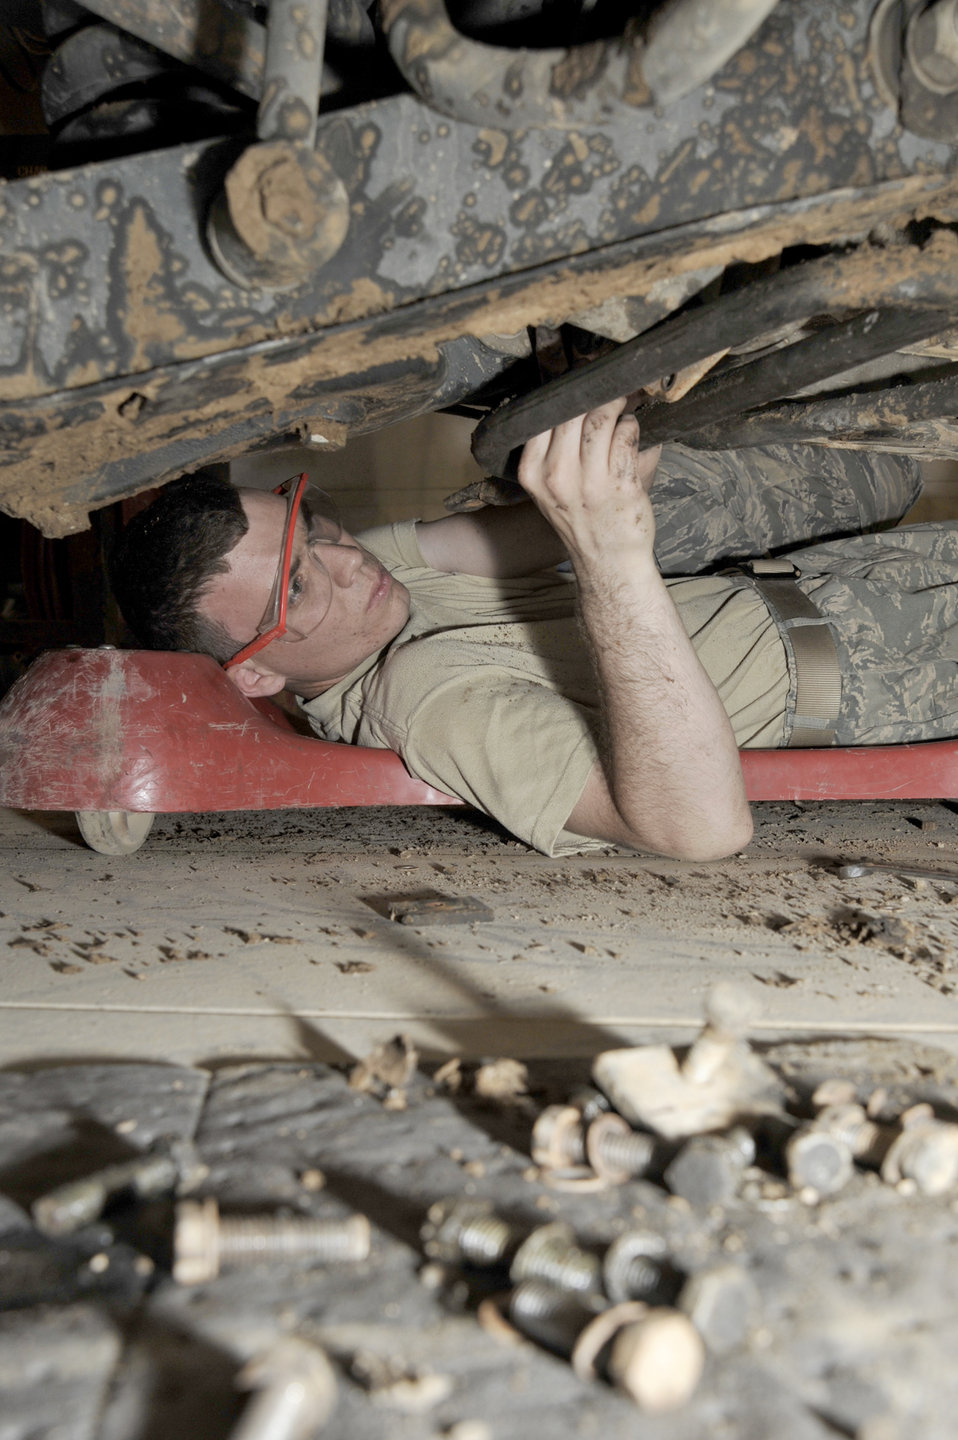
Following Dad's footsteps

Airman 1st Class Ryan Slifko removes a brake caliper to install new brake pads on a Humvee June 19, 2010, at Sather Air Base, Iraq. Airman Slifko joined the Air Force, went into the same career field, and deployed to the same unit as his father, Senior Master Sgt. CJ Slifko. Airman Slifko is a vehicle mechanic with the 447th Expeditionary Logistics Readiness Squadron. Sergeant Slifko is the vehicle fleet manager for the 447th ELRS.